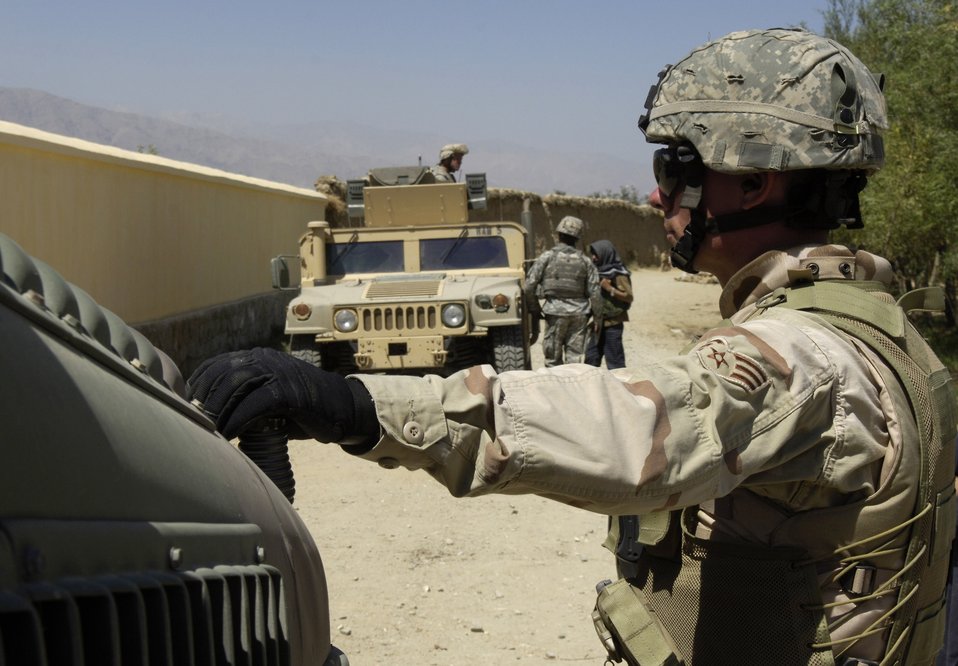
PRT at work

Senior Airman Brandon Eakins pulls security for the Bagram Provincial Reconstruction Team in Afghanistan Aug. 30.